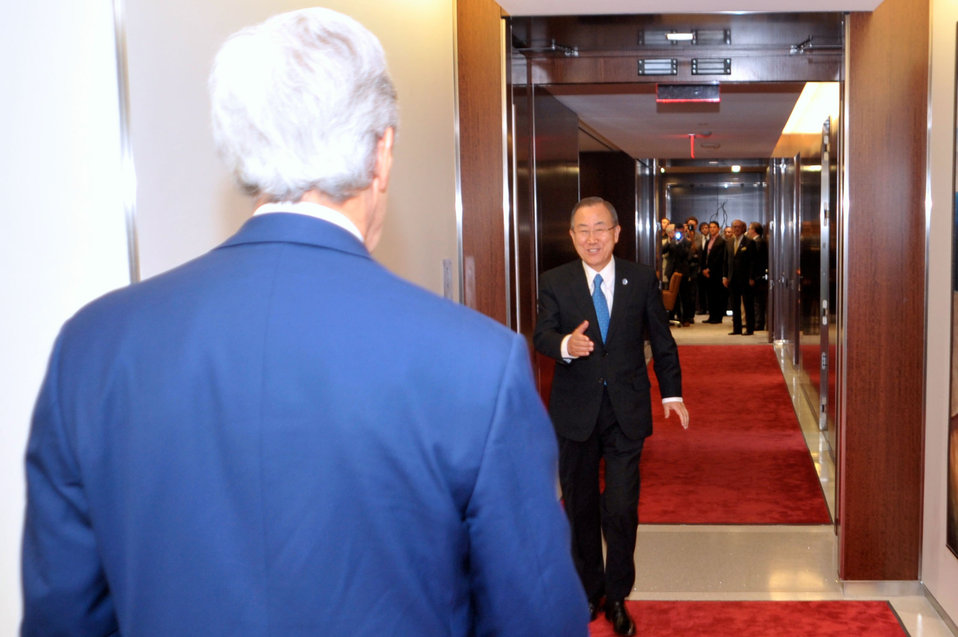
UN Secretary General Ban Ki-moon Greets Secretary Kerry

United Nations Secretary General Ban Ki-moon greets U.S. Secretary of State John Kerry as he arrives for their meeting at the United Nations headquarters in New York City on July 25, 2013.